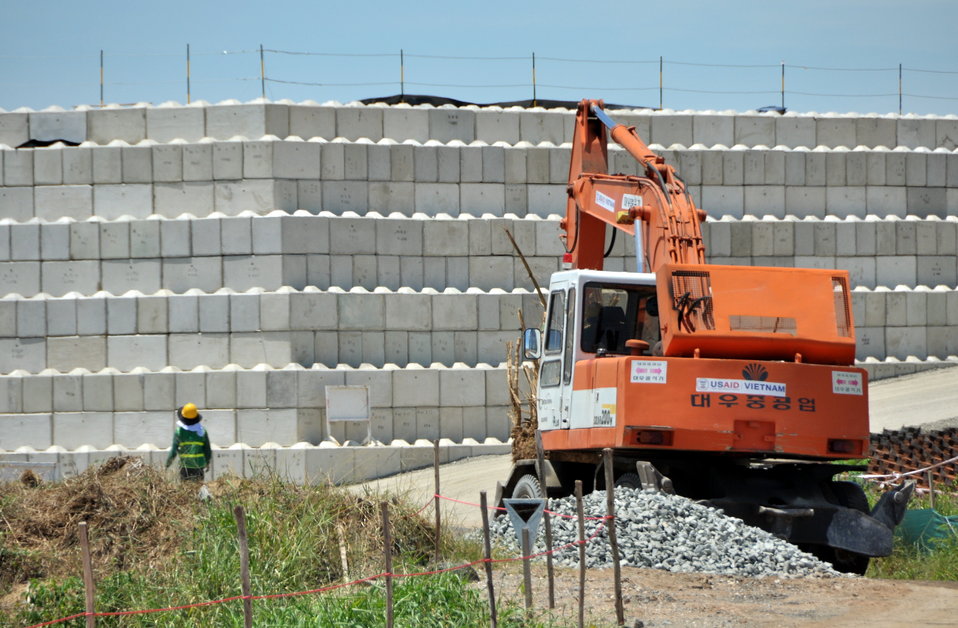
Environmental Remediation Progress at the Danang Airport site

Progress at the Remediation of Dioxin Contamination Project Site

Danang, Vietnam, June 5, 2013